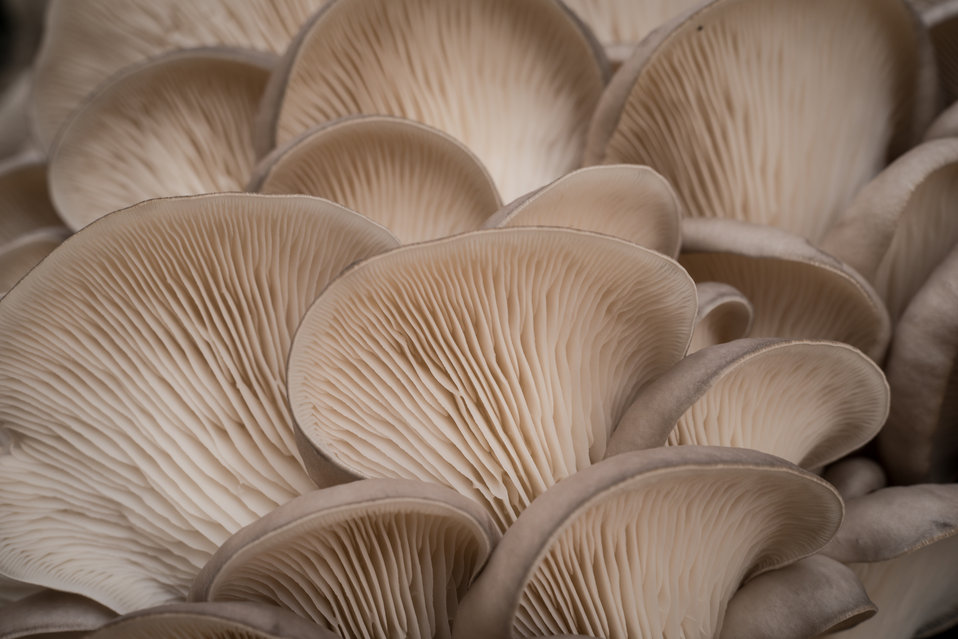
Oyster mushrooms on display at the U.S. Department of Agriculture (USDA) farmers markets and Harvest Festival at the USDA Whitten Building east parking lot in Washington, DC, on Friday, November 22, 2013.